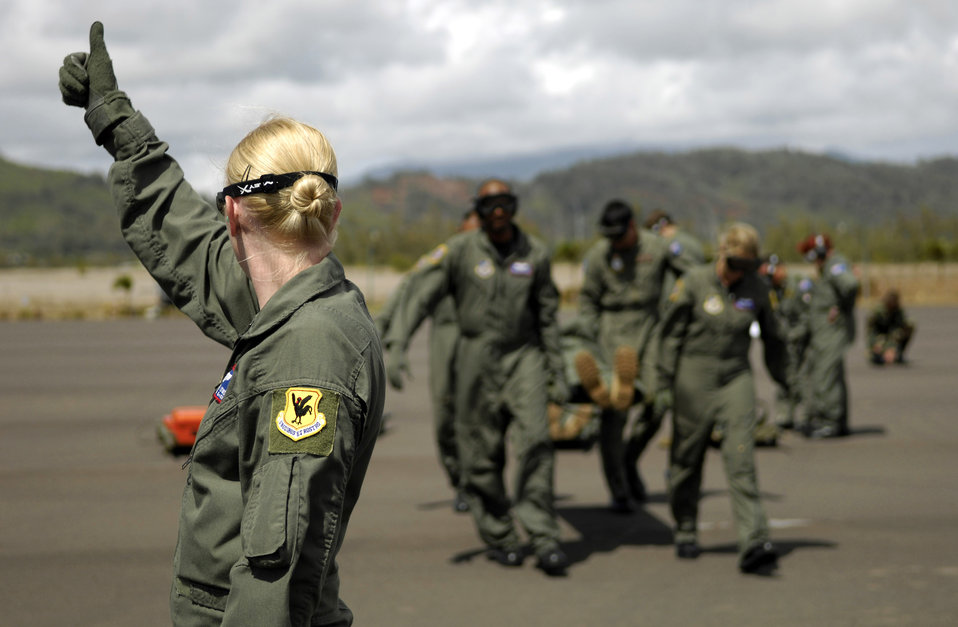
Australians train to save lives on C-17

Staff Sgt. Kristen Lewis signals a crew of Air Force and Royal Australian Air Force medical personnel to load a patient on to a C-17 Globemaster III Oct. 16 during aeromedical evacuation operations training at Kona International Airport, Hawaii. Airmen from the 18th Aeromedical Squadron from Kadena Air Base, Japan, are there to train RAAF medical personnel who will be using specialized equipment and the C-17 for aeromedical evacuation. Sergeant Lewis is with the 18th AMS.